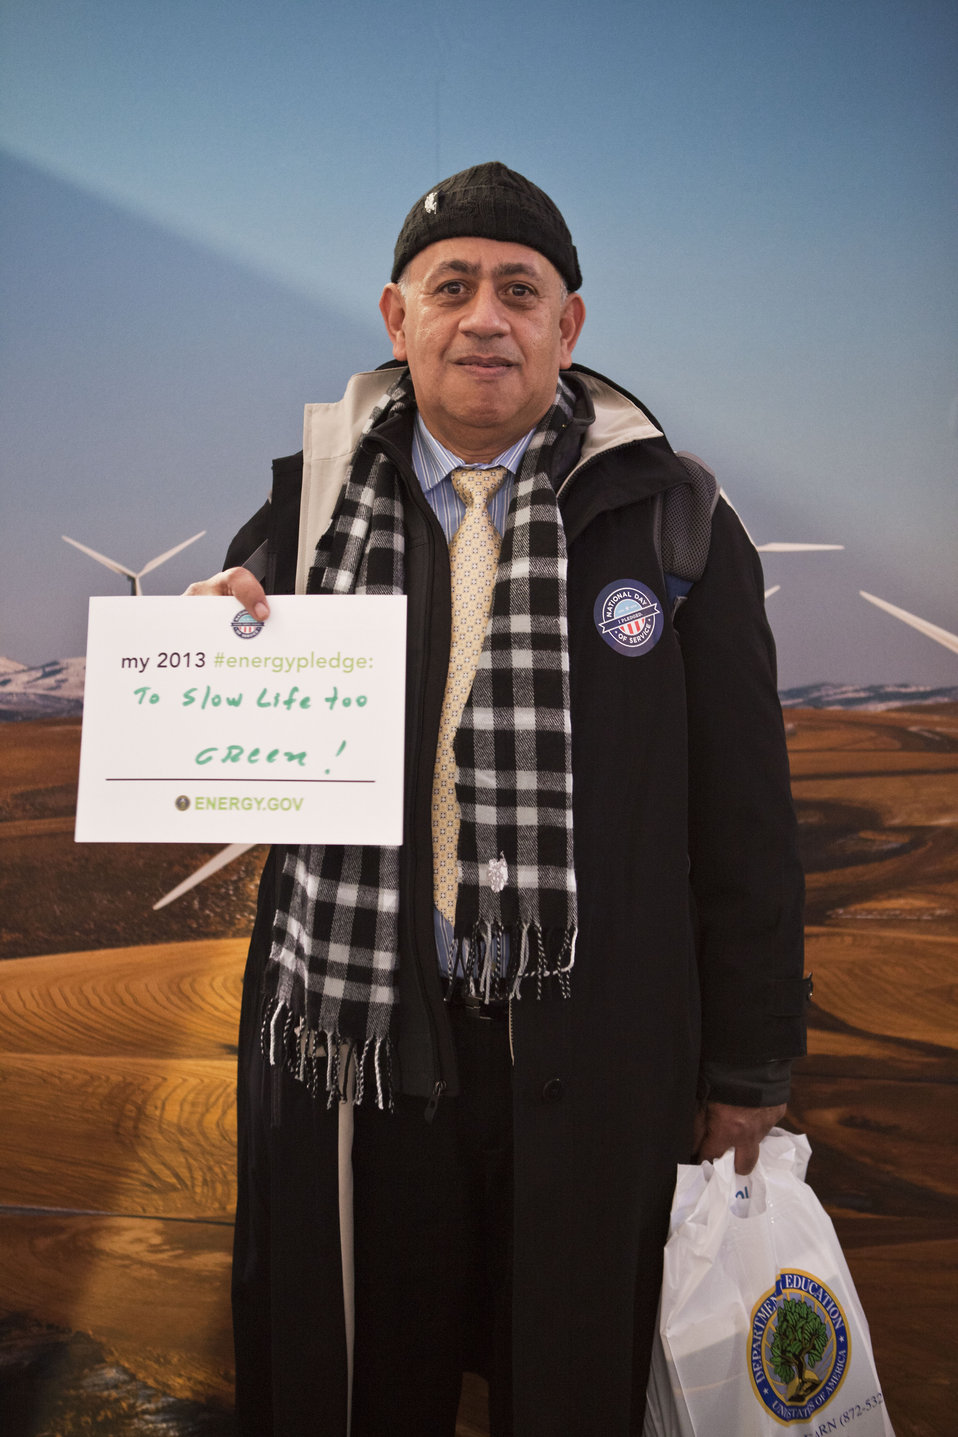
What's your #energypledge?